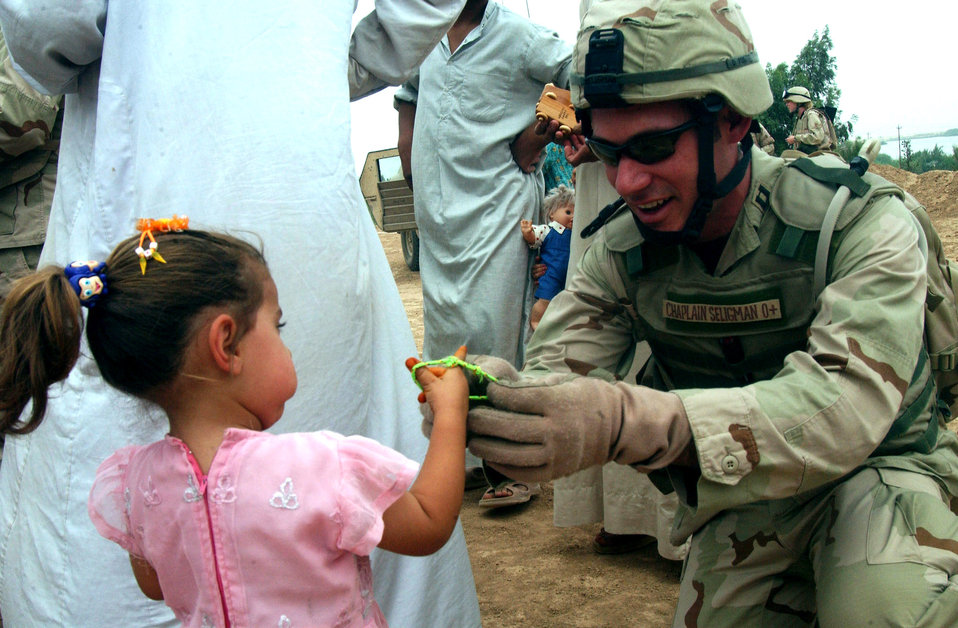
Chaplains do good works for Iraqi neighbors

IRAQ -- Chaplain (Capt.) Charles Seligman gives a local girl a bracelet during a humanitarian visit. The chaplain, along with volunteers from Balad Air Base, spent time at a local village handing out gifts as part of their mission to maintain and improve relations with Iraqis. He is assigned to the 332nd Air Expeditionary Wing.